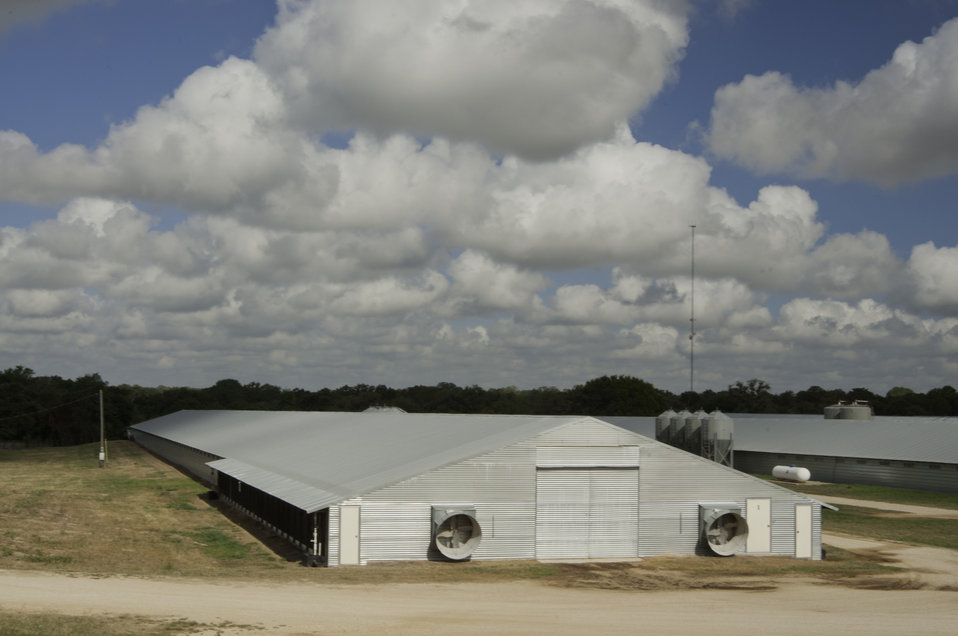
A poultry house sits in the sun on the Bobby Morgan Poultry Farm Luling, TX on Aug. 23, 2013.